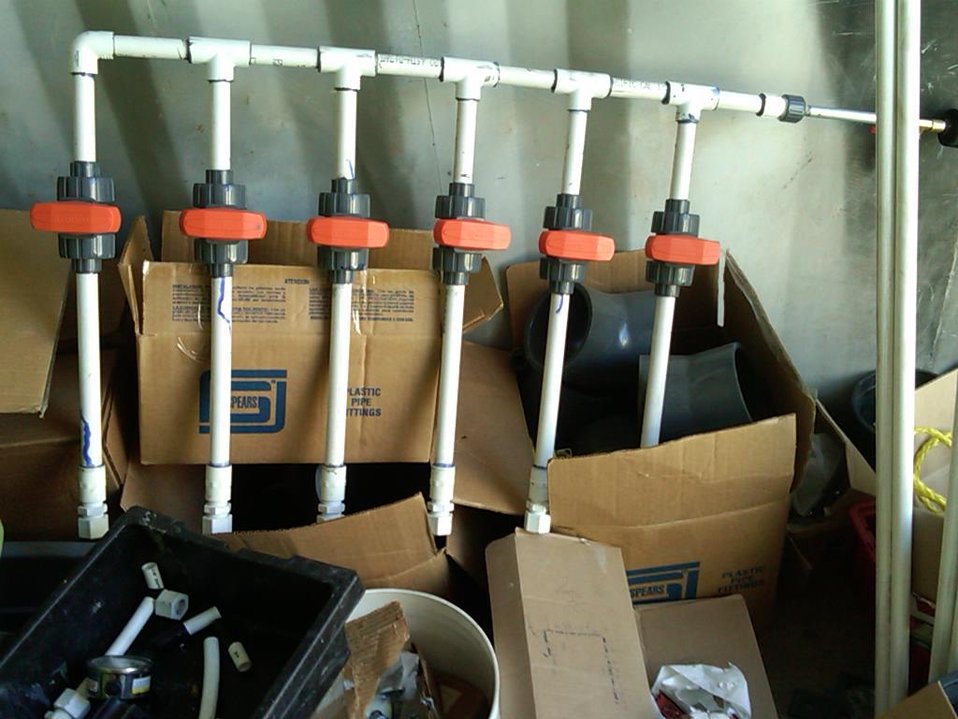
Recovery Act Supports Soil and Debris Cleanup, Groundwater Treatment at SLAC

Recovery Act workers are on track to remove more than 30,000 cubic yards of contaminated soil and debris at the SLAC National Accelerator Laboratory by September 2011.
The Recovery Act invested $14.3 million in legacy cleanup activities at SLAC. In addition to removing contaminated soil and debris that is shipped to local disposal facilities, Recovery Act workers installed three new groundwater treatment systems.